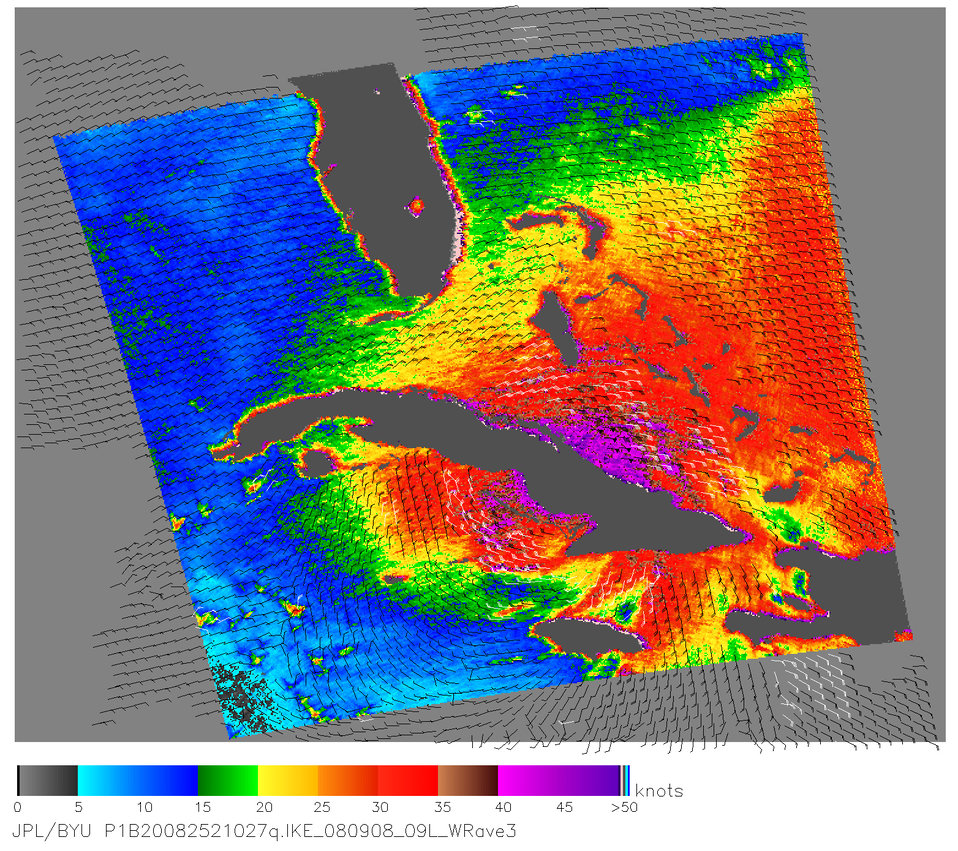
QuikSCAT Watching Ike's Winds